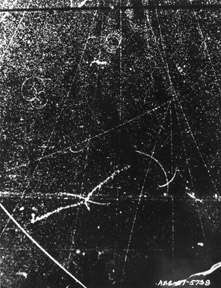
Neutron-proton collision produced by Brookhaven Cosmotron. c. 1957